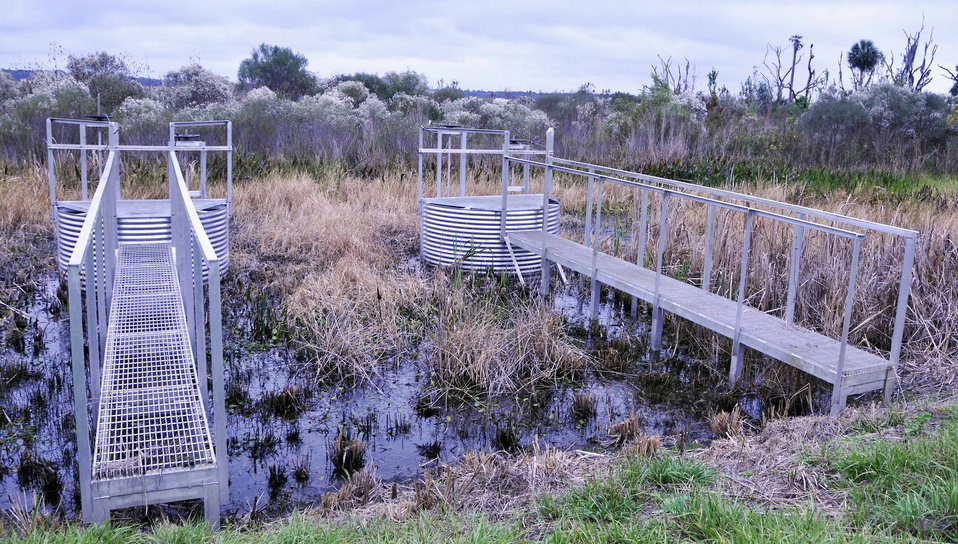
LevyPrairie1

The U.S. Department of Agriculture’s (USDA) Natural Resource Conservation Service (NRCS) installed water control structures that lessened downstream flooding in the Levy Prairie wetland basin near Gainesville, FL. This public land features six and a half miles of trails, which weave through Florida’s unique wetland landscape. In the late 1960s, ranchers built levees around the area, dug canals and continually kept it drained for pastures to raise cattle. In 2001, the U.S. Department of Agriculture’s (USDA) Natural Resources Conservation Service (NRCS) worked with a local rancher return the land to its natural state. The landowner enrolled the land into a conservation easement through the former Wetlands Reserve Program, which provides financial assistance for farmers, ranchers and forest landowners who transform working lands into wetlands. The 2014 Farm Bill merged this program with two other easement programs, forming the Agricultural Conservation Easements Program.